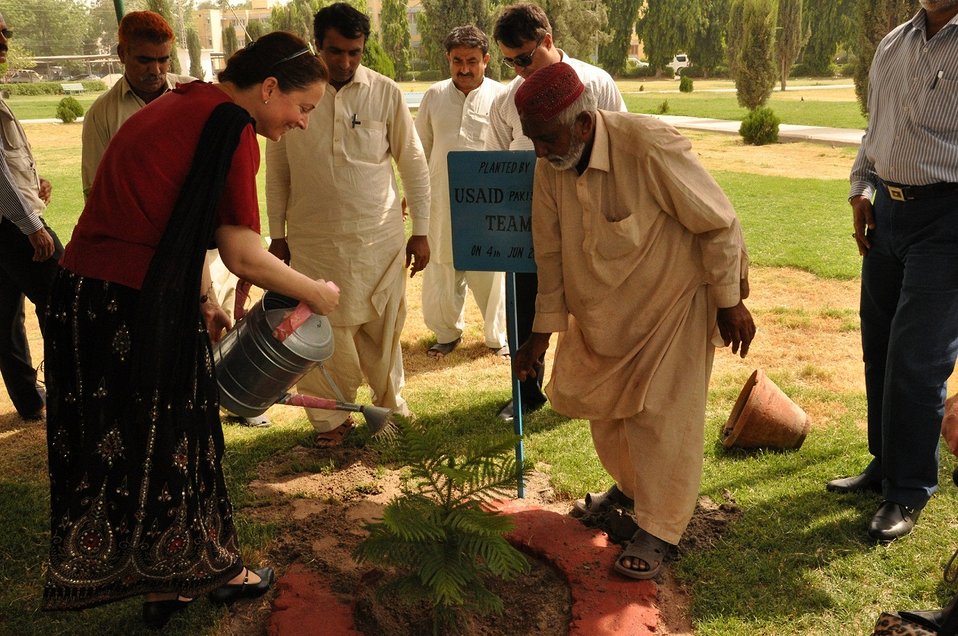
USAID Visit to HESCO

Hyderabad, June 5, 2012: A team of USAID officials led by Ms. Melissa Knight, USAID Energy Office Director, visited Hyderabad Electric Supply Company (HESCO) to discuss the ongoing projects of USAID for HESCO and received briefing from the CEO HESCO, Muzaffar Ali Abbasi about the performance of HESCO. The projects undertaken by USAID Power Distribution Program for HESCO were also discussed and results achieved so far were presented by HESCO. The USAID team along with HESCO officials then planted a tree at HESCO employee colony.